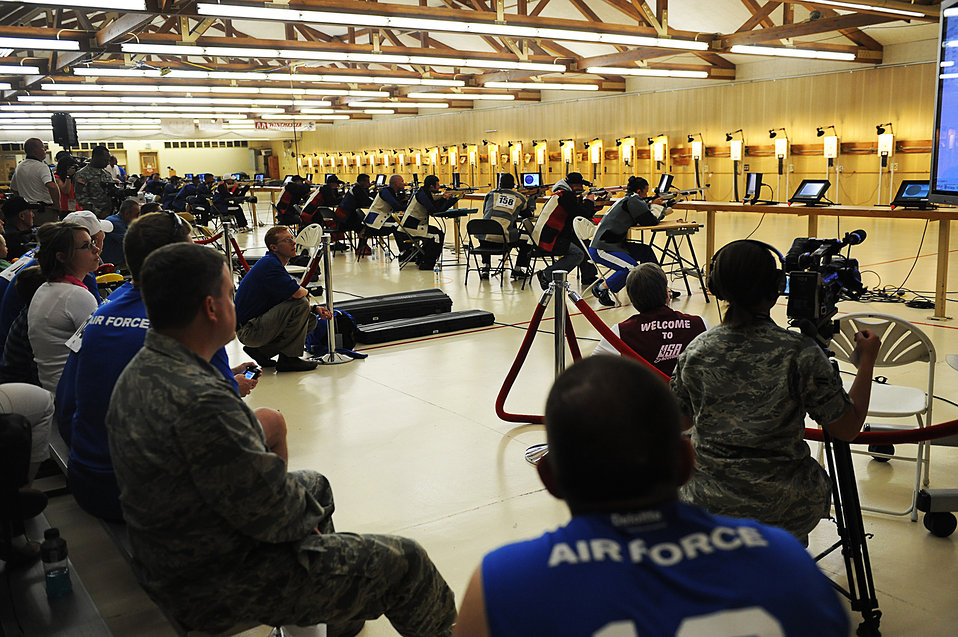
Warrior Games

Teammates and spectators watch as Stacy Pearsall, at end of the table, and other athletes take part in the finals of the rifle competition of Warrior Games 2012 at the Olympic Training Center in Colorado Springs, Colo., May 3, 2012. Pearsall is with the Air Force team.